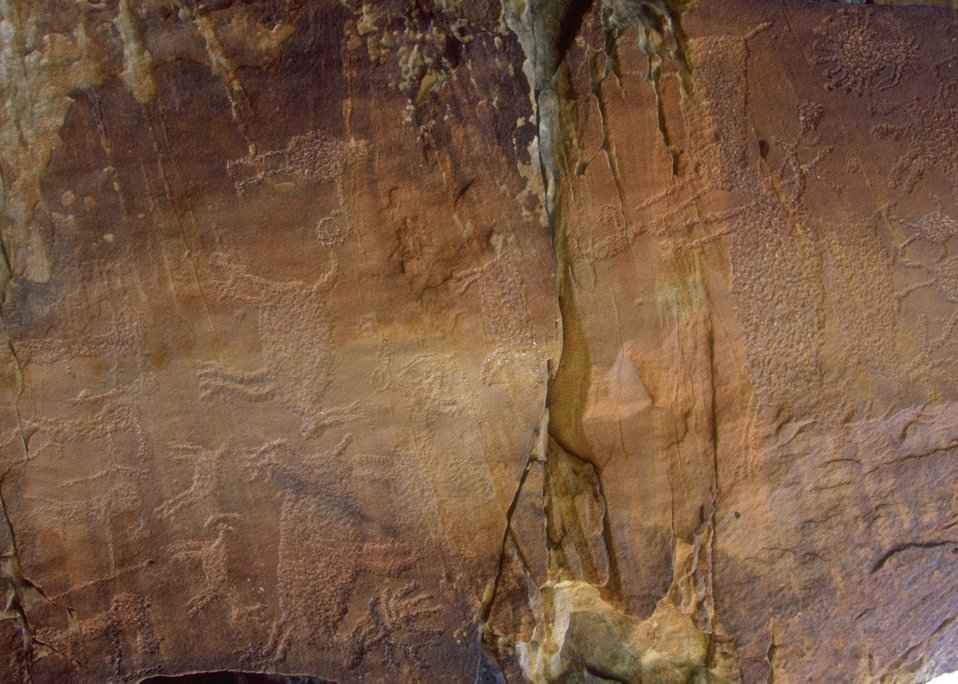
Petroglyph panel in Whoopup Canyon, Newcastle Field Office.